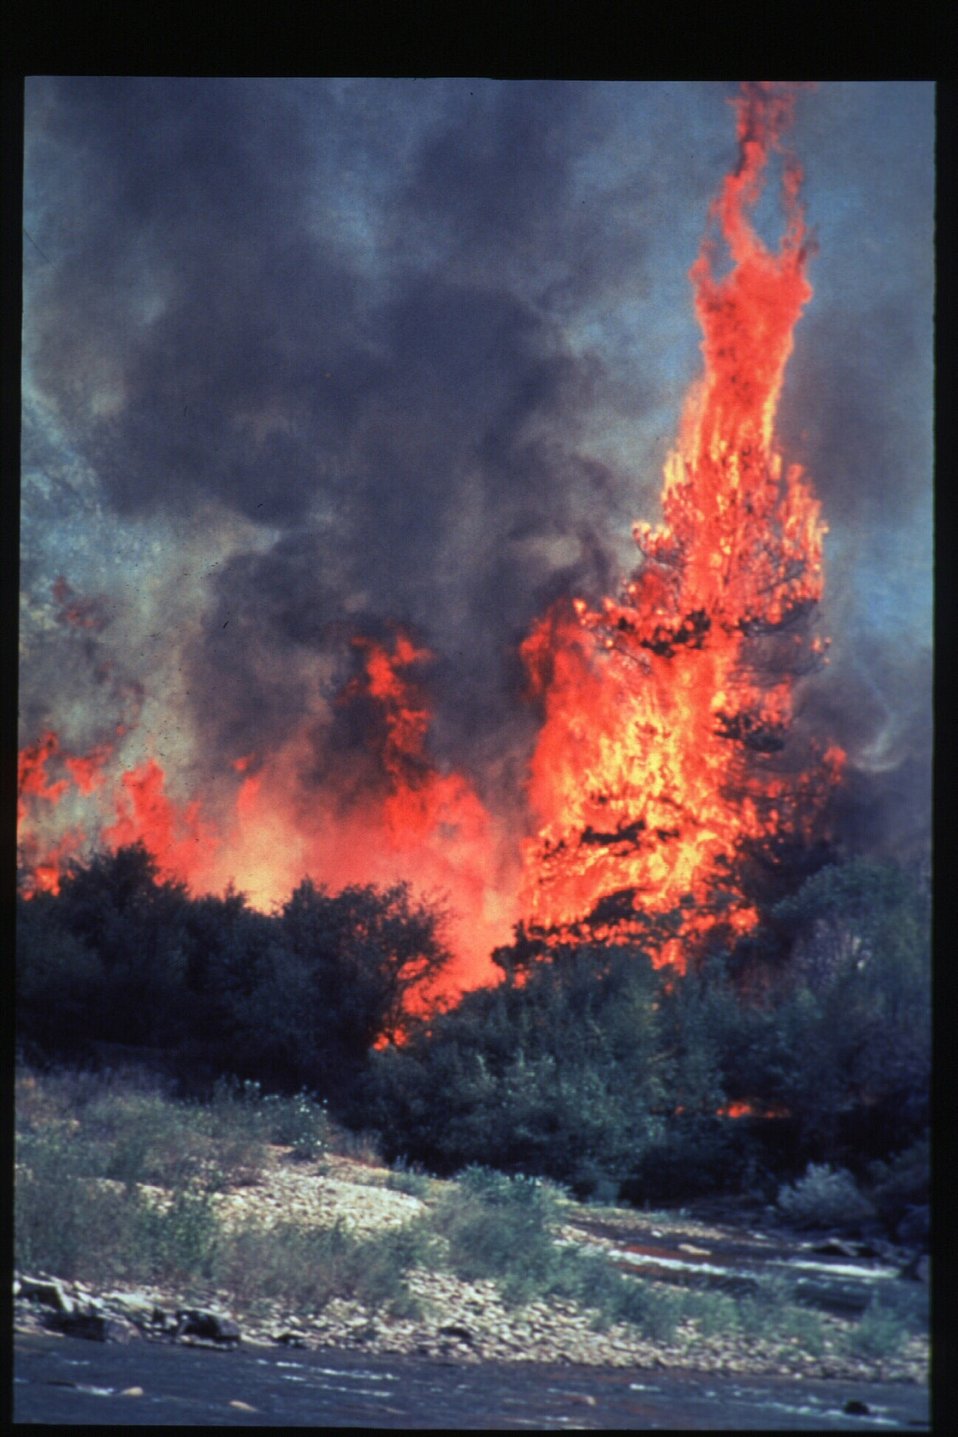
Boise Foothills Fire Danskin Mountains and South Fork of Boise River Four River Field Office LSRD Lower Snake River District